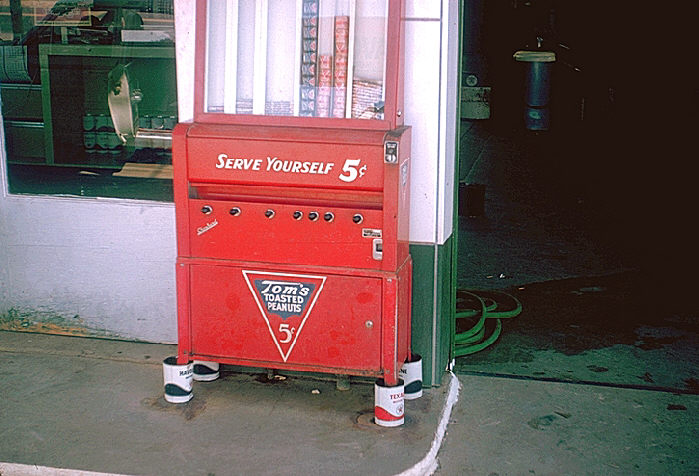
Aedes aegypti mosquito breeding site in cans under legs of food vending machine, San Antonio, Texas.